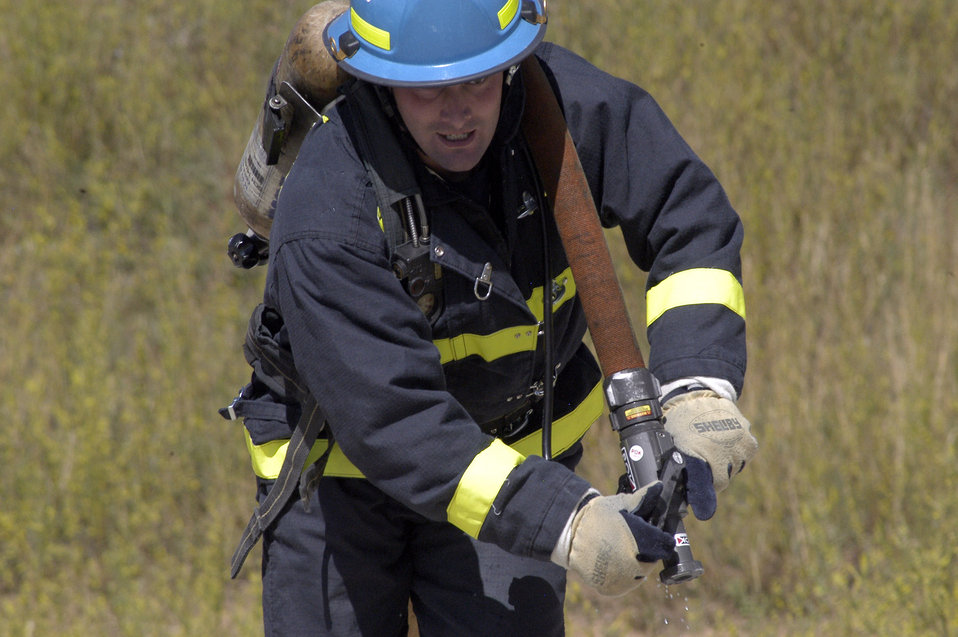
Dragging along

U.S. AIR FORCE ACADEMY, Colo. -- Staff Sgt. Daniel Arnes trains for a hose-drag event by pulling a fire hose 75 feet before spraying a target with it. The hose drag is the fourth of five events which comprise the firefighter combat challenge here, and simulates real-world tasks of firefighting in a timed competition.